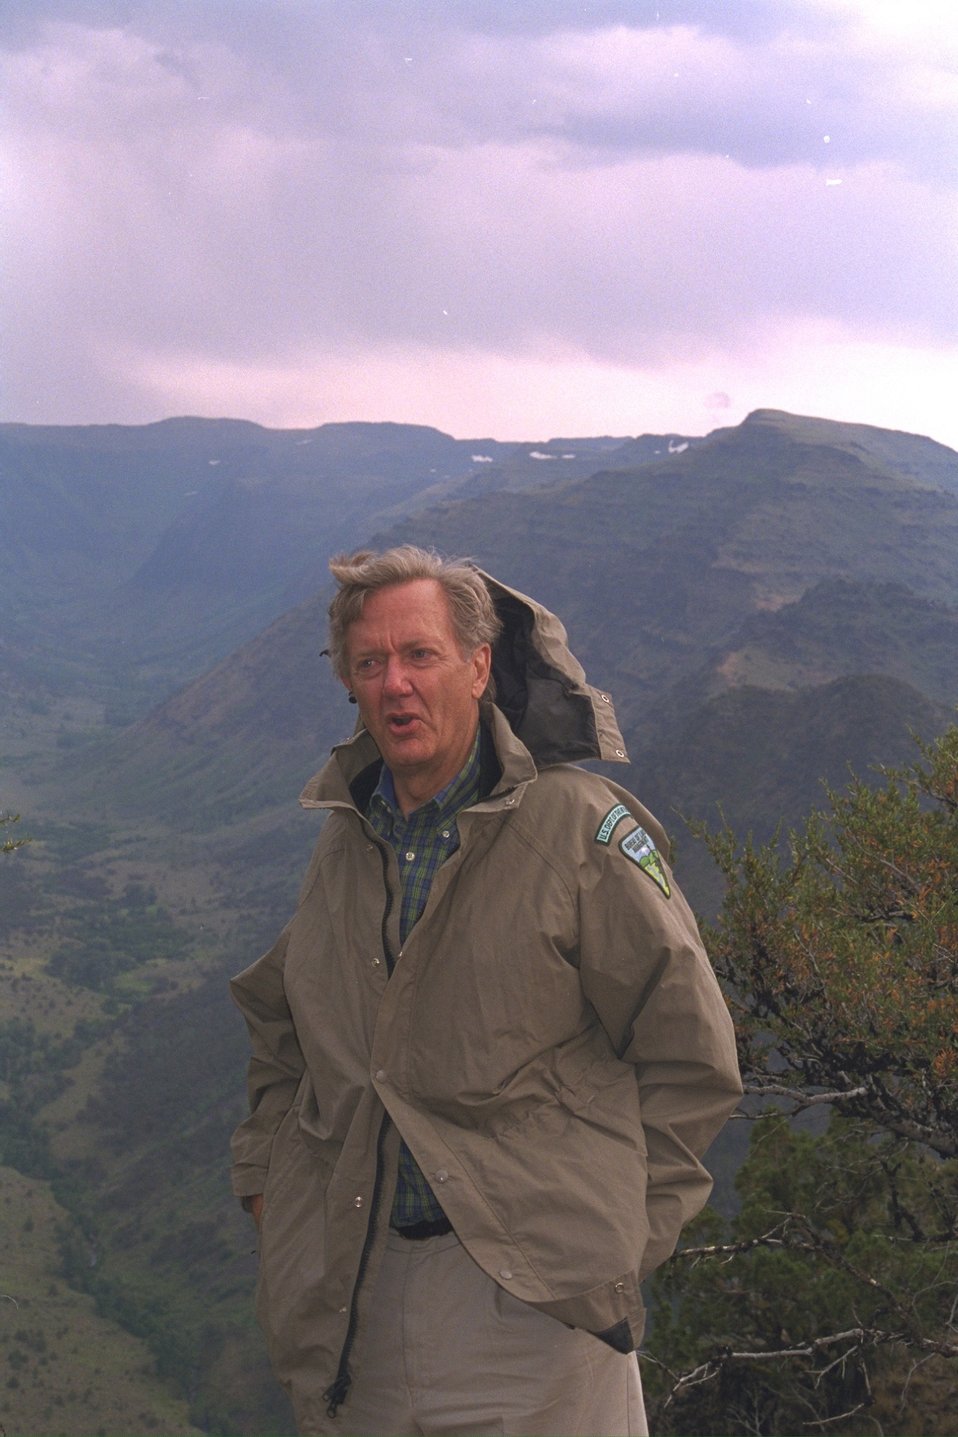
Secretary of the Interior, Bruce Babbitt, at Big Indian Gorge on Steens Mountain.